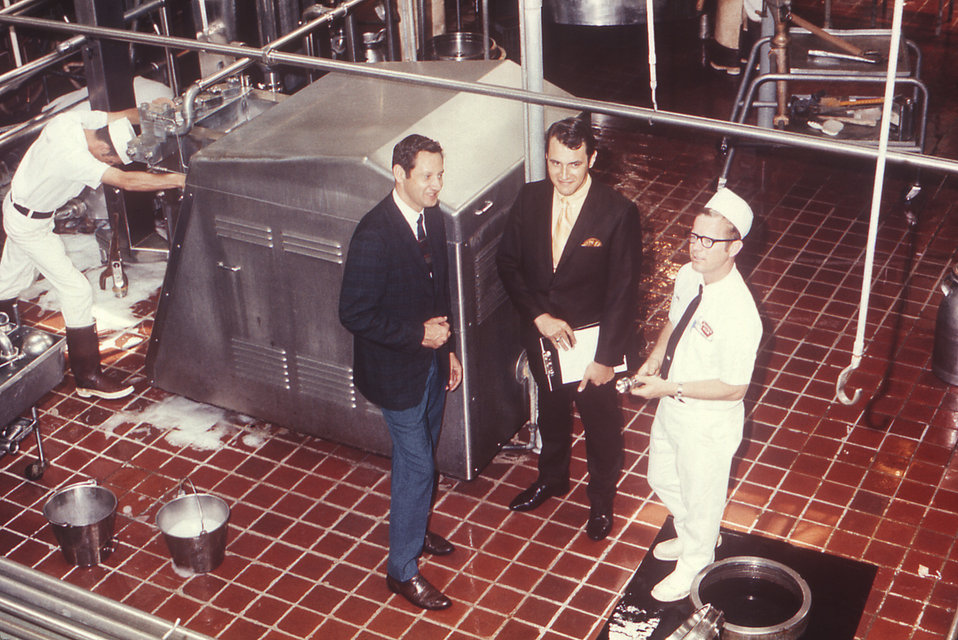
In this 1970 photograph, two CDC sanitarians Frank Bran (Lt), and an unidentified official (Middle), were inspecting the milk-production machinery, during a tour of a dairy farm being conducted by one of the facility's technicians.